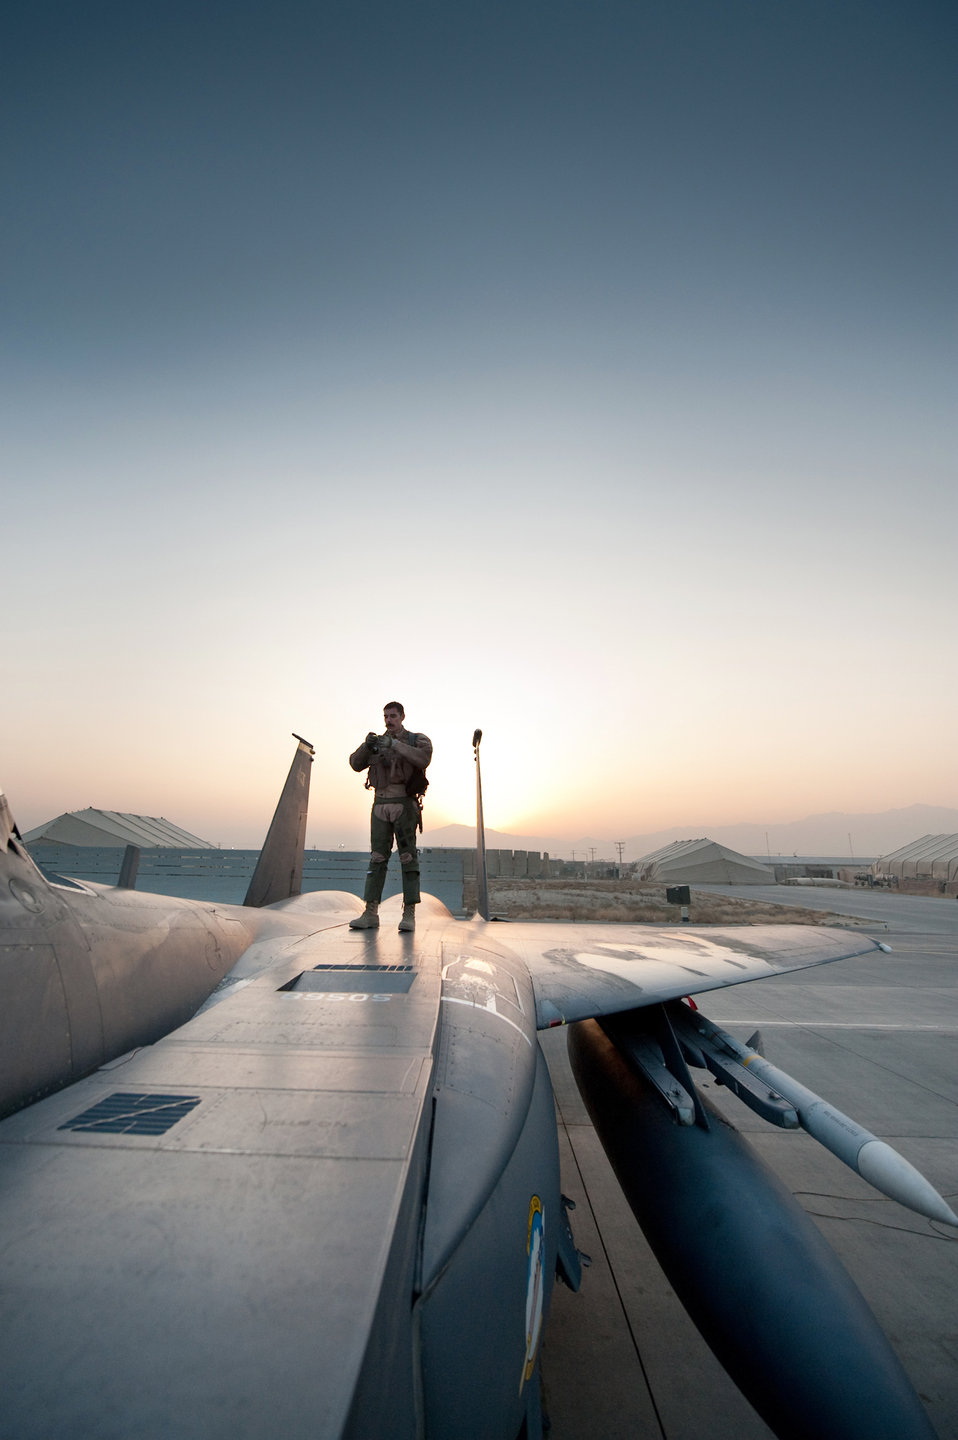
Mission preparation at Bagram

An Airman performs a preflight inspection of his F-15E Strike Eagle before taking off Jan. 4, 2011, at Bagram Airfield, Afghanistan. The 336th Expeditionary Fighter Squadron performs close- air-support missions within the local area and is deployed from Seymour Johnson Air Force Base, N.C.